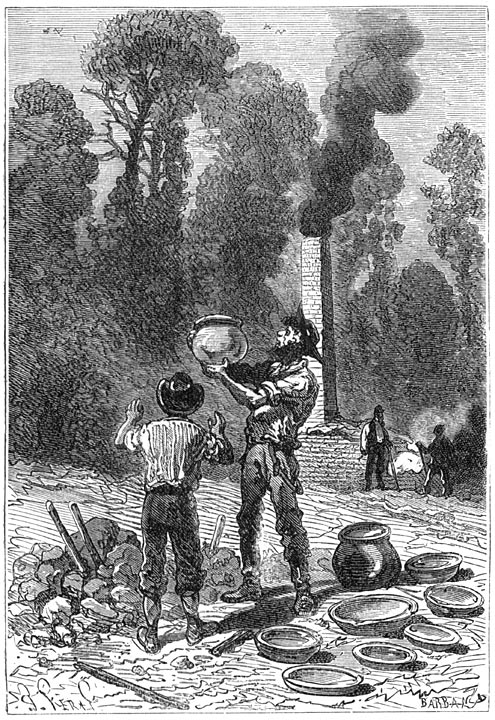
An illustration from Jules Verne's novel 'The Mysterious Island' (1873-74) drawn by Jules Férat. Polski: Ilustracja powieści Juliusza Verne'a 'Tajemnicza wyspa' (tytuł przekładany także jako: Wyspa tajemnicza, 1873-74) autorstwa Julesa Férata. Français : Jules Verne: 'L’Île mystérieuse' (1873-74), dessins par Jules Férat. Orginal description from the book: Français : Les colons fabriquèrent une poterie commune.